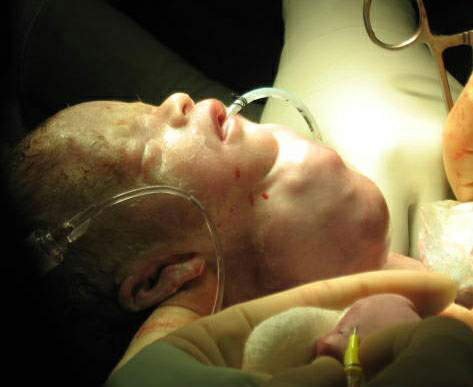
Wilford Hall doctors perform lifesaving procedure on newborn

Alexander Gardner is intubated while his body is still in his
mother's uterus at Wilford Hall Medical Center Feb. 27. The rare procedure,
call EXIT, for ex-utero intrapartum treatment, was performed by an Air Force
medical team to open the baby's airway which was blocked by a large tumor on
his neck. The baby is the son of Army Staff Sgt. Christopher Gardner,
assigned to 23rd Armored Calvary Regiment at Ft. Hood, Texas, and is
recovering in the Wilford Hall Neonatal Intensive Care Unit.